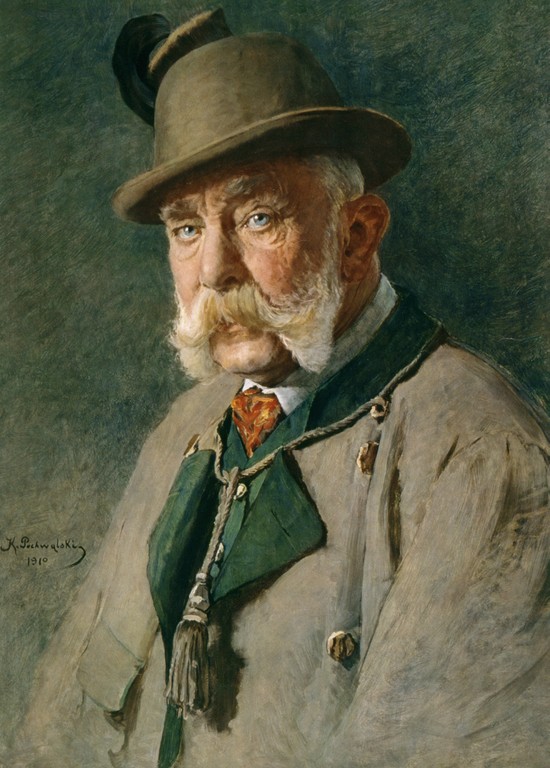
Deutsch: Kaiser Franz Joseph in Jagdkleidung, 1910, Farbdruck nach einem Gemälde von Kasimierz Pochwalski; Bundesmobilienverwaltung